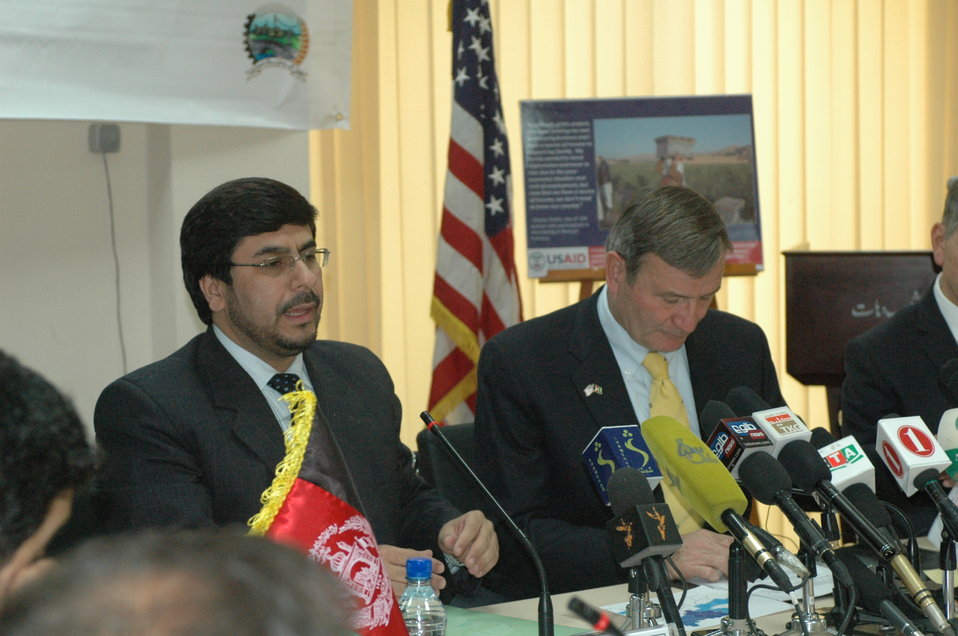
Community Based Stabilization Grants Ceremony, December 7, 2010